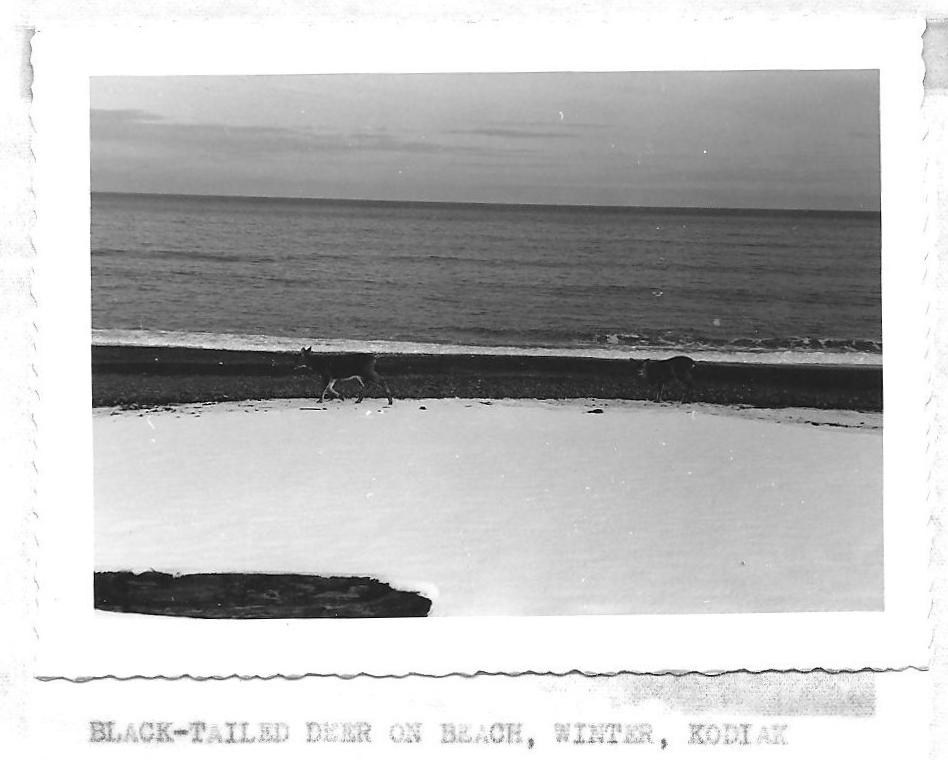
(1953) Black-Tailed Deer on Beach

Credit: USFWS

Source and Contact: Kodiak National Wildlife Refuge